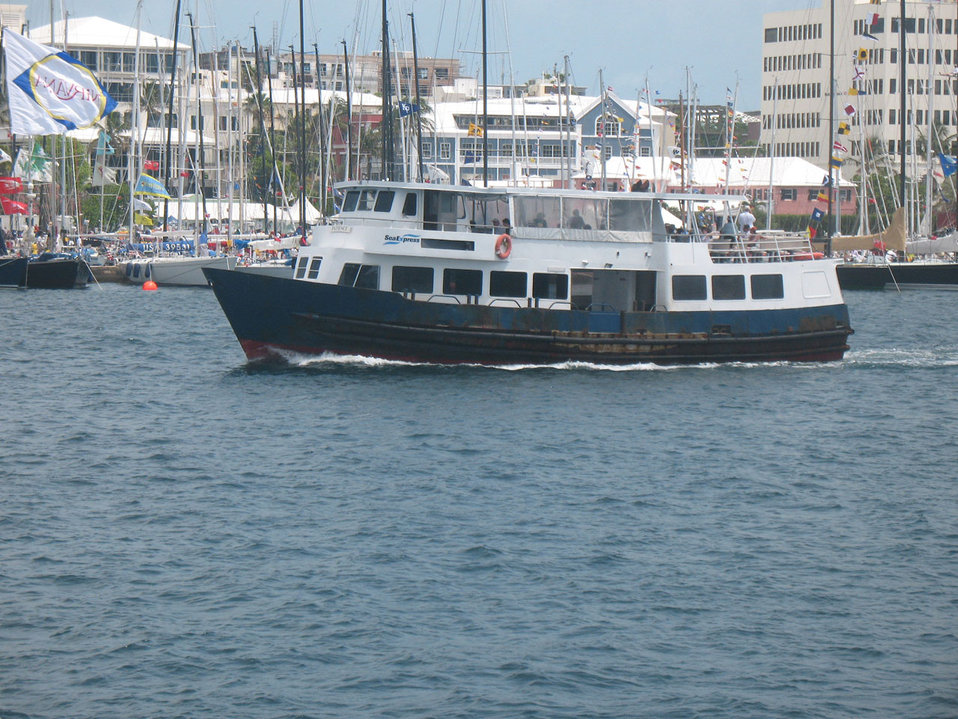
Tour boat

Bermuda tour boat.